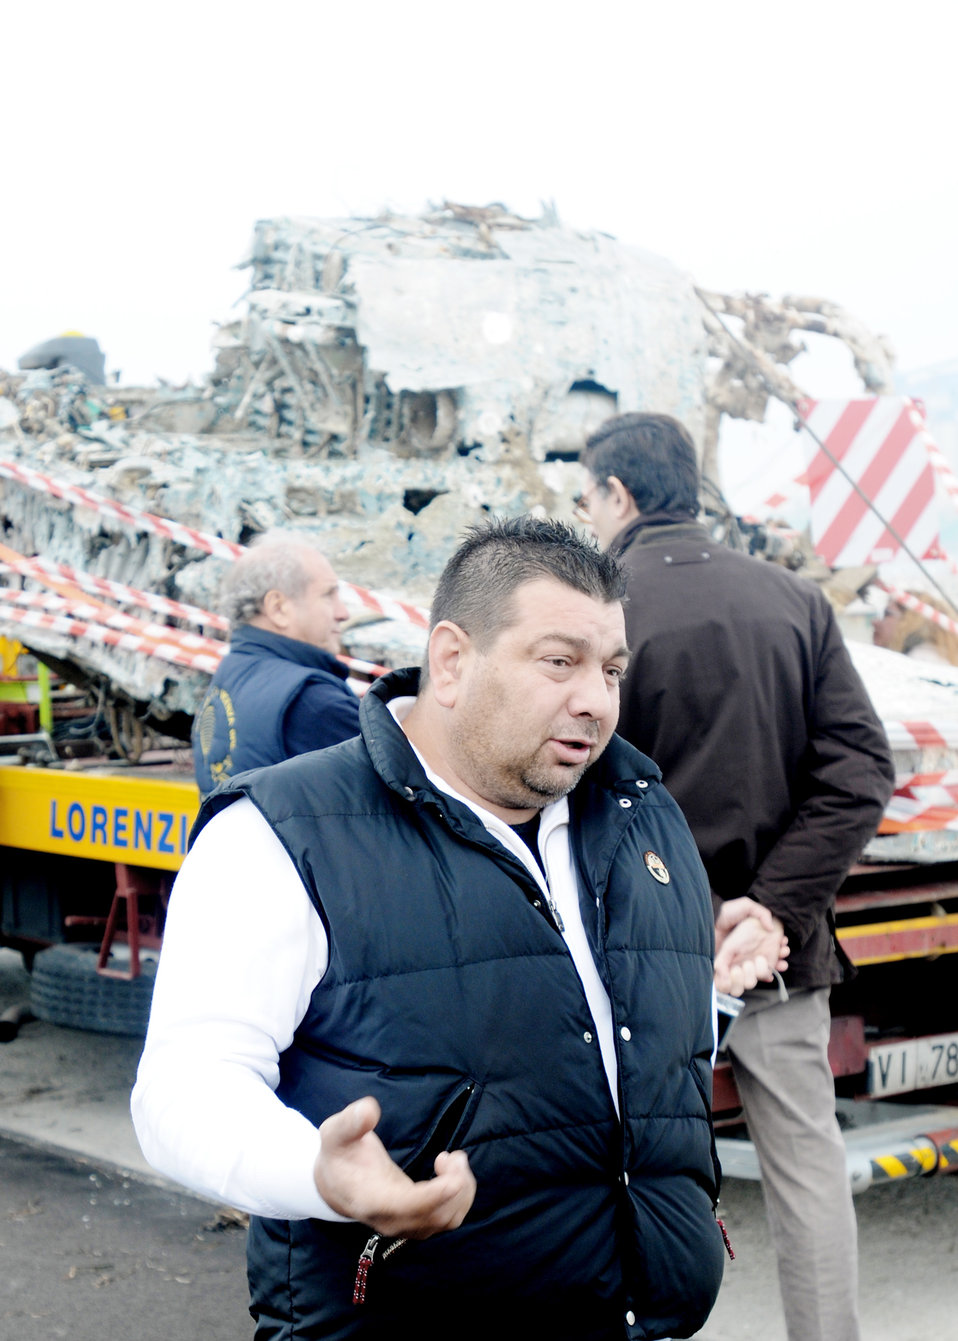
Italian fishermen net historic 'Jug' at sea

Italian fisherman Filippo Salvagno talks in front of aircraft wreckage, believed to be a World War II Army Air Force P-47 Thunderbolt fighter, that crashed into the Adriatic Sea in the mid-1940s Nov. 14, 2009, at the Chioggia Lagoon in Italy. Mr. Salvagno recovered a large section of the aircraft during a fishing expedition in May 2009.